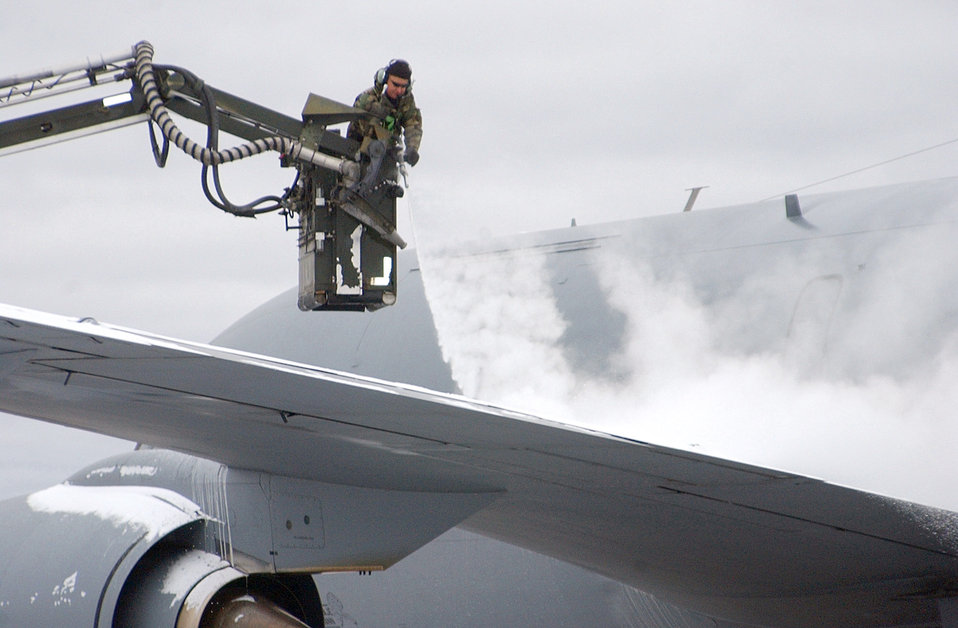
Thunderous combat

EIELSON AIR FORCE BASE, Alaska -- An Airman de-ices a KC-135 Stratotanker from Kadena Air Base, Japan, before it takes off on its first Cope Thunder mission Oct. 10. The two-week Alaskan exercise is the largest air combat training exercise, involving more than 1,000 active-duty and Air National Guard Airmen and 87 aircraft.